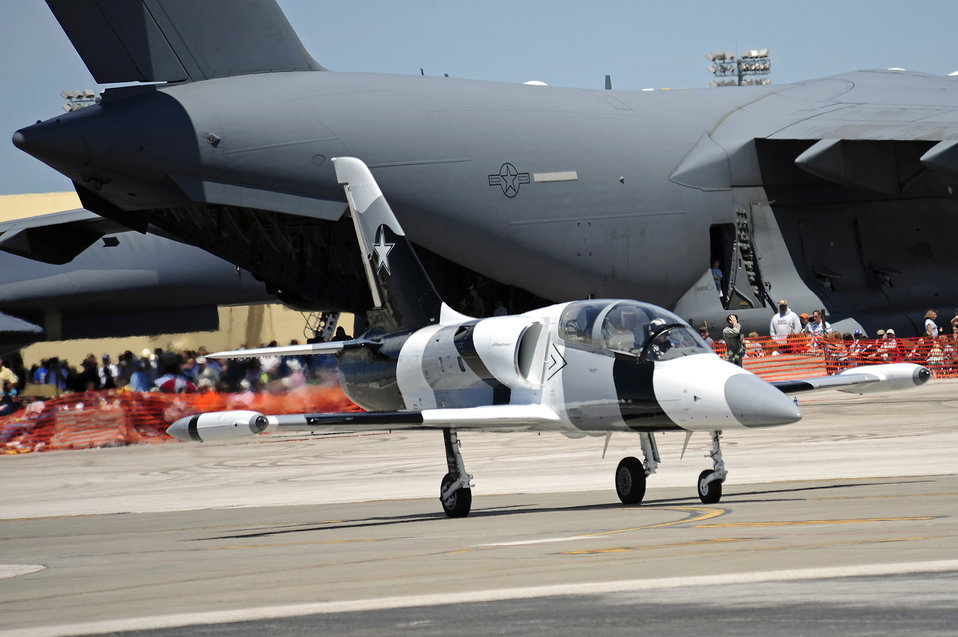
2011 Dakota Thunder air show

An L-39 Albatros taxis June 4, 2011, during the 2011 Dakota Thunder air show at Ellsworth Air Force Base, S.D.